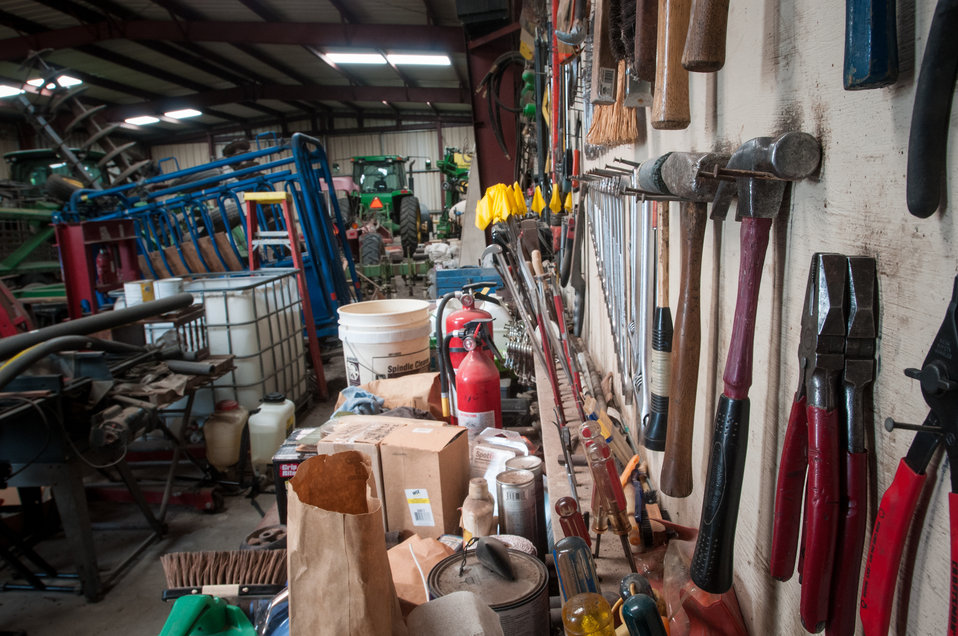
Tools used on Popp Farms 05 (pronounced Pope), a five generation farming family, is based in El Campo, TX on Jun. 20, 2013. The 2,400 acres of farmland currently grow cotton and milo (grain sorghum) and are part of the United Agricultural Cooperative, Incorporated.